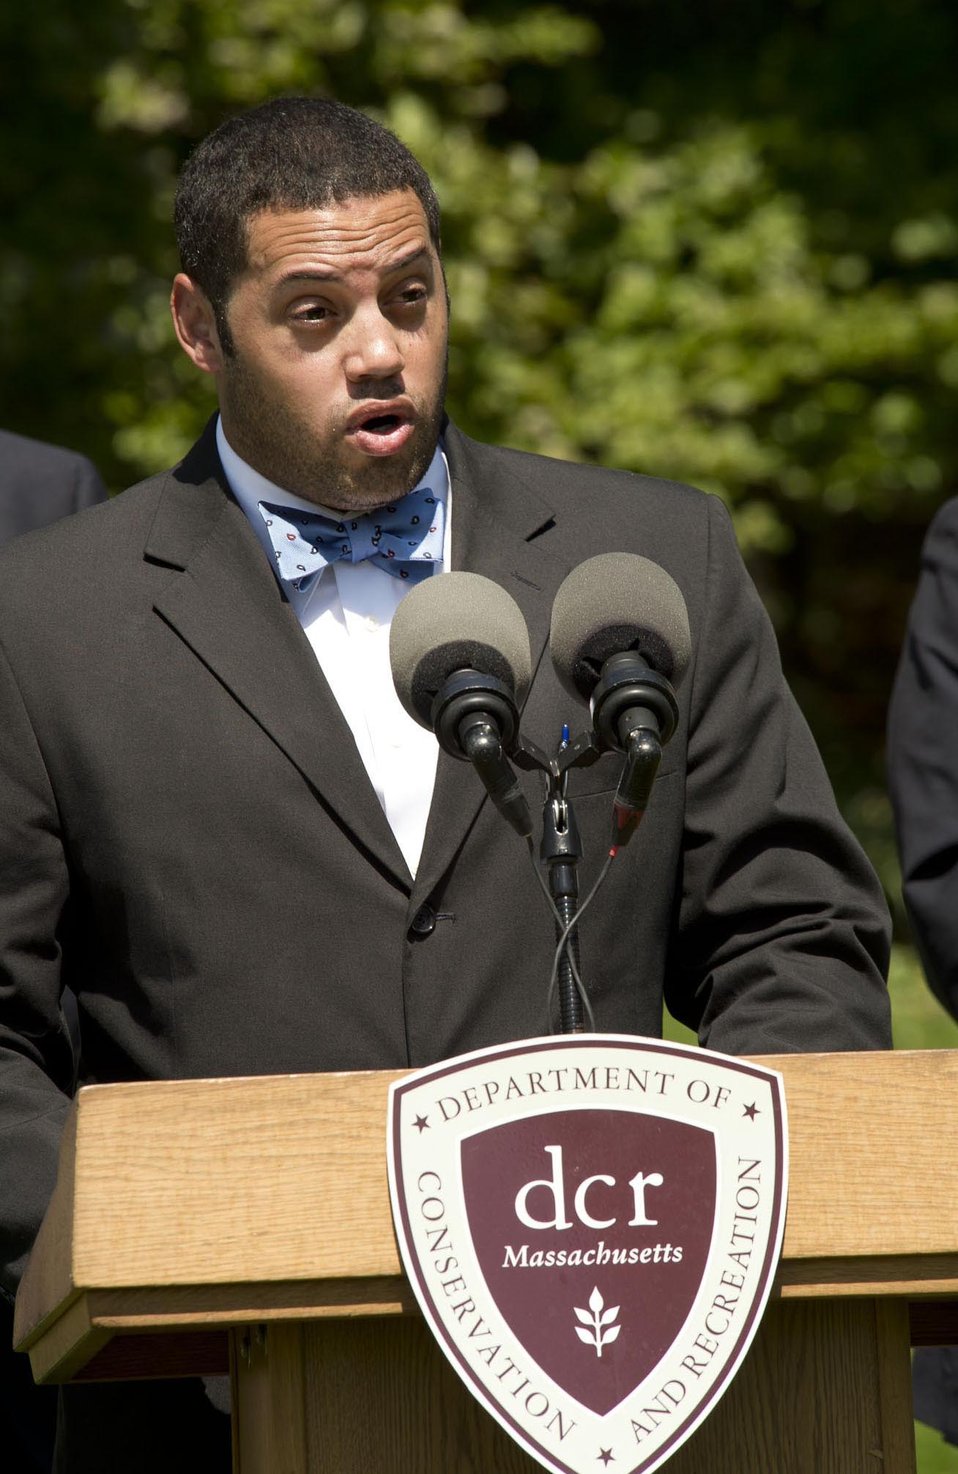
U. S. Department of Agriculture (USDA) Marketing and Regulatory Programs (MRP) Deputy Under Secretary Gary Woordward speaks at the declaration event for the eradication of Asian Longhorned Beetle (ALB) in Boston, MA on May 12, 2014. Federal, state and local officials joined together to announce that ALB has been eradicated from the Boston regulated area. Boston joins five other areas to declared eradication of ALB in the U.S.